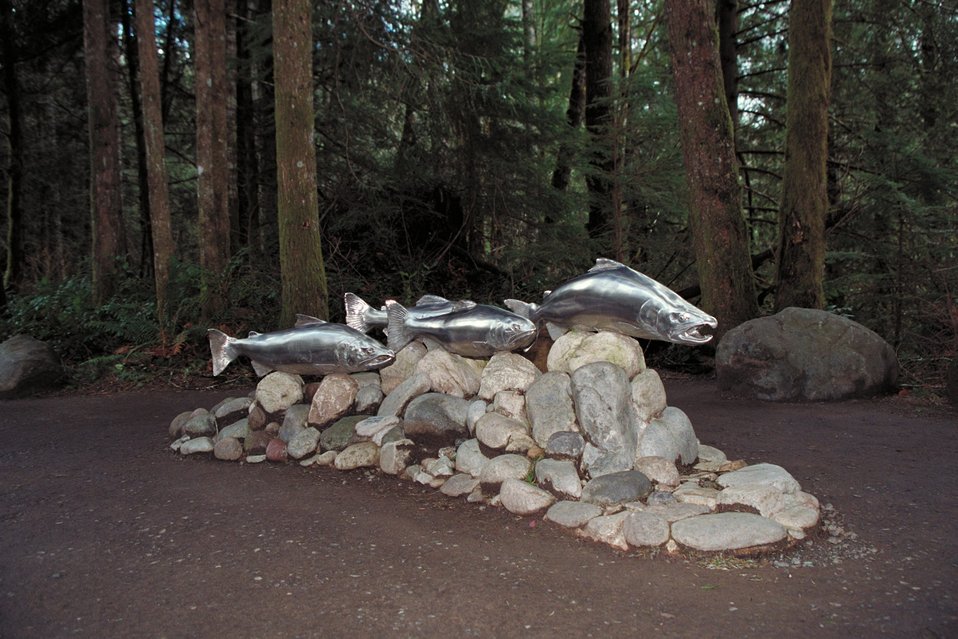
Cascade Stream Watch is an environmental education program conducted at BLM's Wildwood Recreation site.